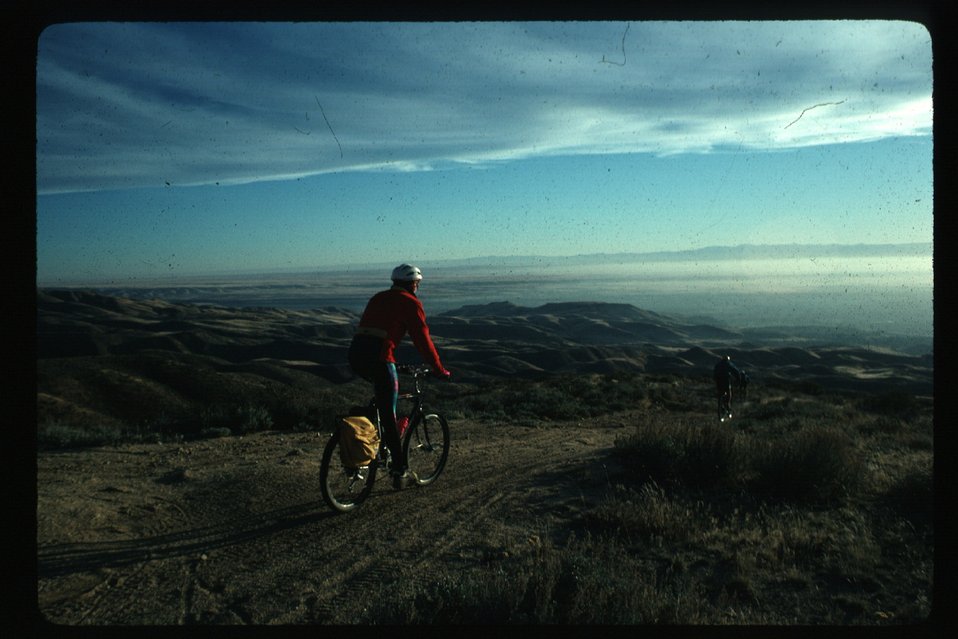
Recreation Boise Front Mountain Bikes Four Rivers Field Office LSRD Lower Snake River District